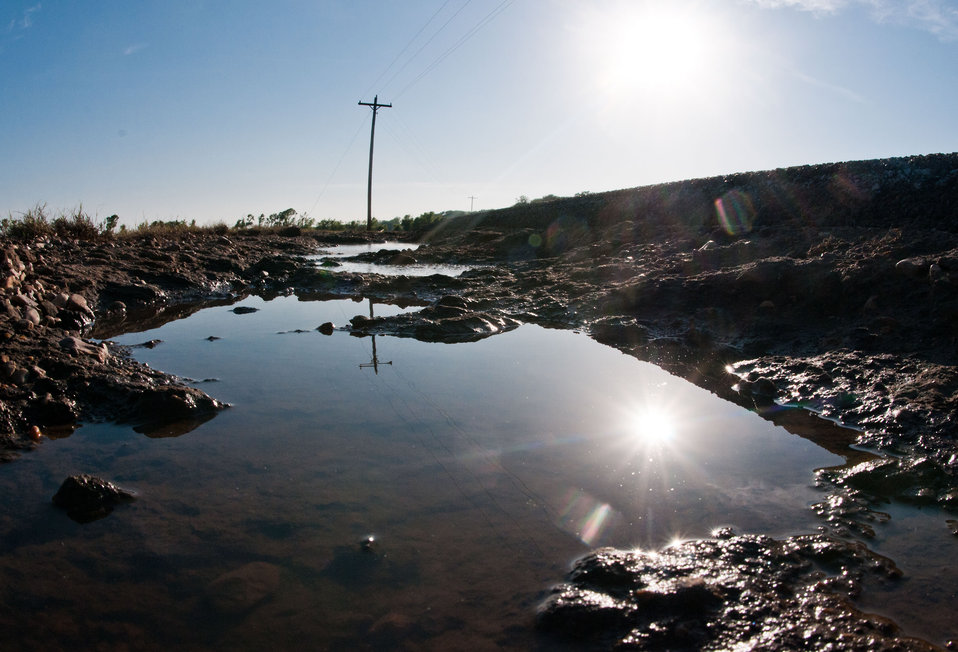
Receding Mississippi River floodwaters reveal the damaging effect on Lauderdale County, TN roadways (right) near Open Lake on Saturday, May 21, 2011. Although seemingly minor, the scouring effect of water flow over the asphalt washed away long stretches of the road base in this county. The damaged areas cannot be simply filled with dirt. The paved and unpaved roadways in flooded areas will require specialized road repairs that are paid for by local counties or municipalities.